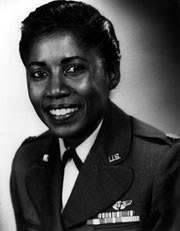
Nancy Leftenant-Colon: First African-American in Army Nurse Corps and former Tuskegee Airman.